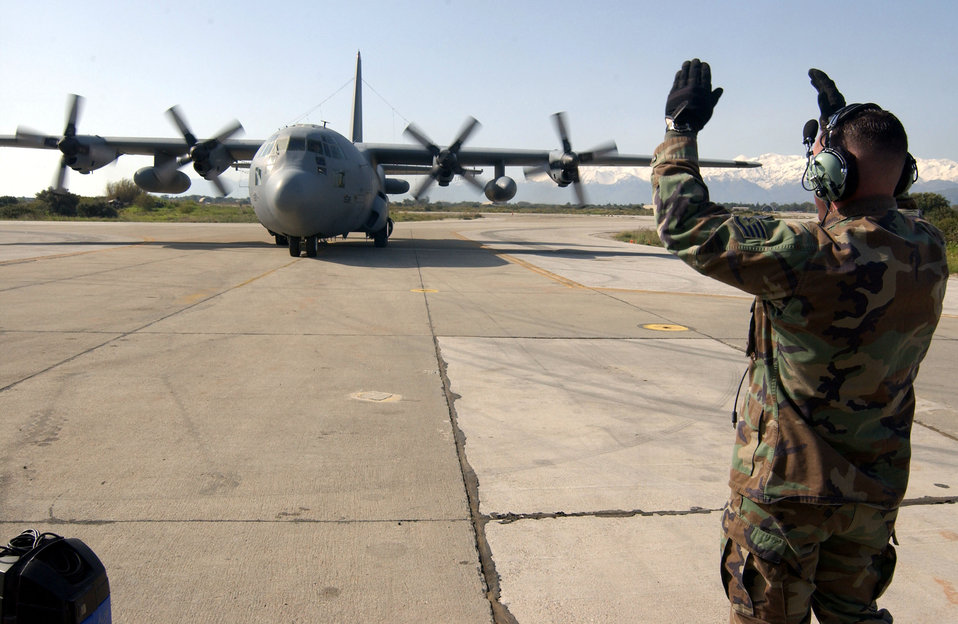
Jammer

OPERATION IRAQI FREEDOM -- Staff Sgt. Matt Auble assigned to the 43rd Expeditionary Electronic Combat Squadron marshals an EC-130 Compass Call after a communication jamming mission in Northern Iraq at a forward deployed operating base located in the Mediterranean region in support of Operation Iraqi Freedom.